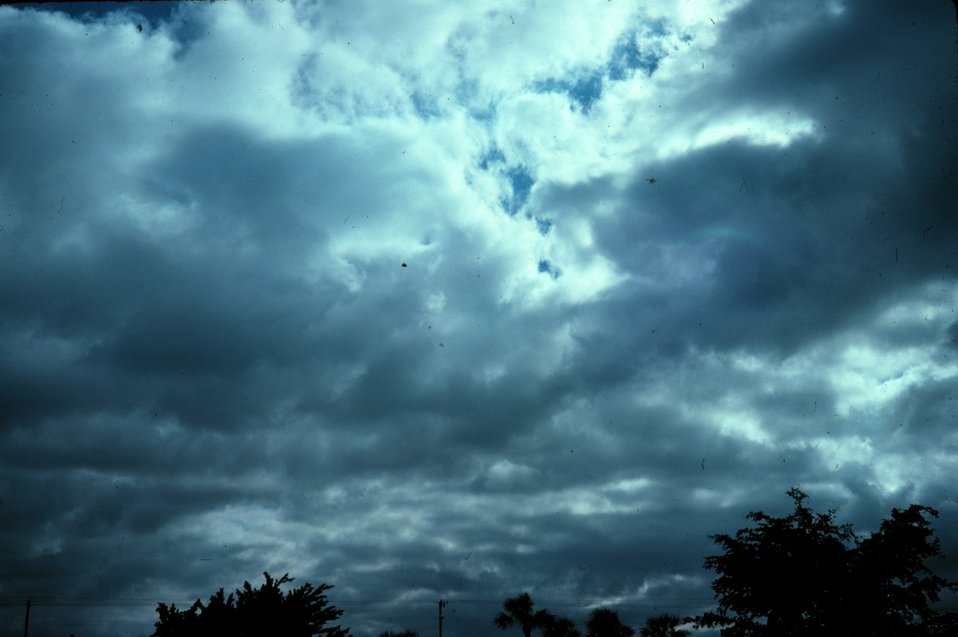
Stratocumulus clouds.